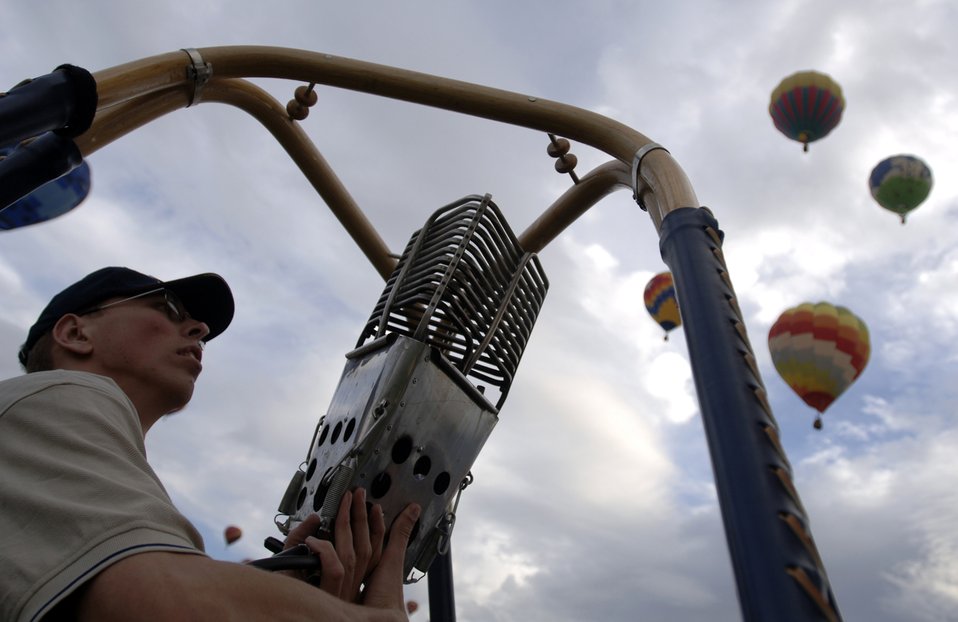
Ready to launch

Staff Sgt. Bill Manus, balloon pilot, prepares to launch his balloon called the Shadow Dancer, with around 700 other hot air balloons participating in the first mass ascension over Fiesta Park during the Balloon Fiesta at Albuqerque, New Mexico, Oct. 7, 2006. Balloon Fiesta is a world-renowned New Mexico attraction where hot air balloons have been flying for 35 years. Sergeant Manus is an electronics warfare journeyman with the 150 Air National Guard.